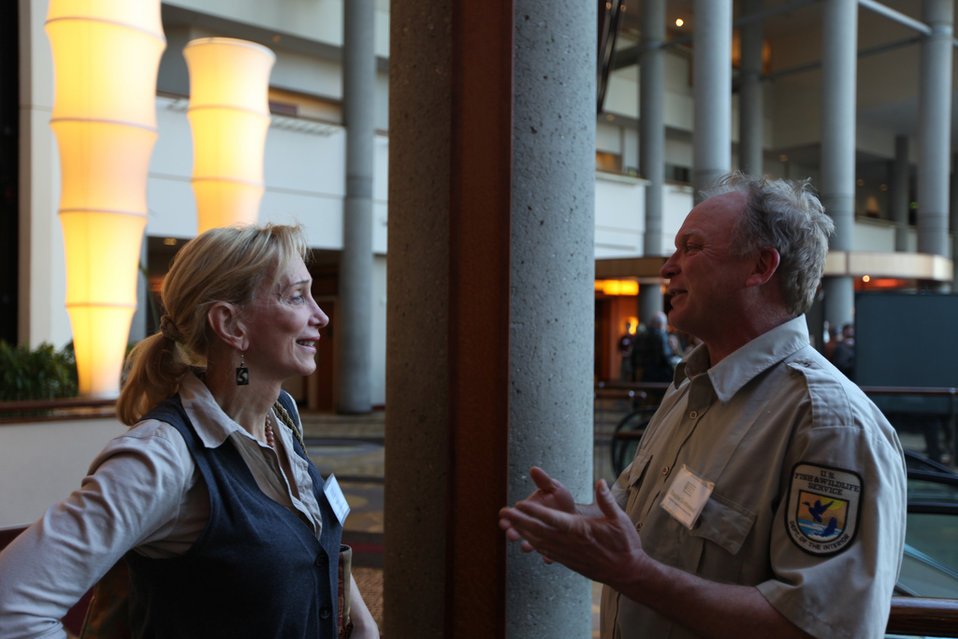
Poster session

Biologists at the Tuesday night poster session at the Northeast Region Biologists Conference.